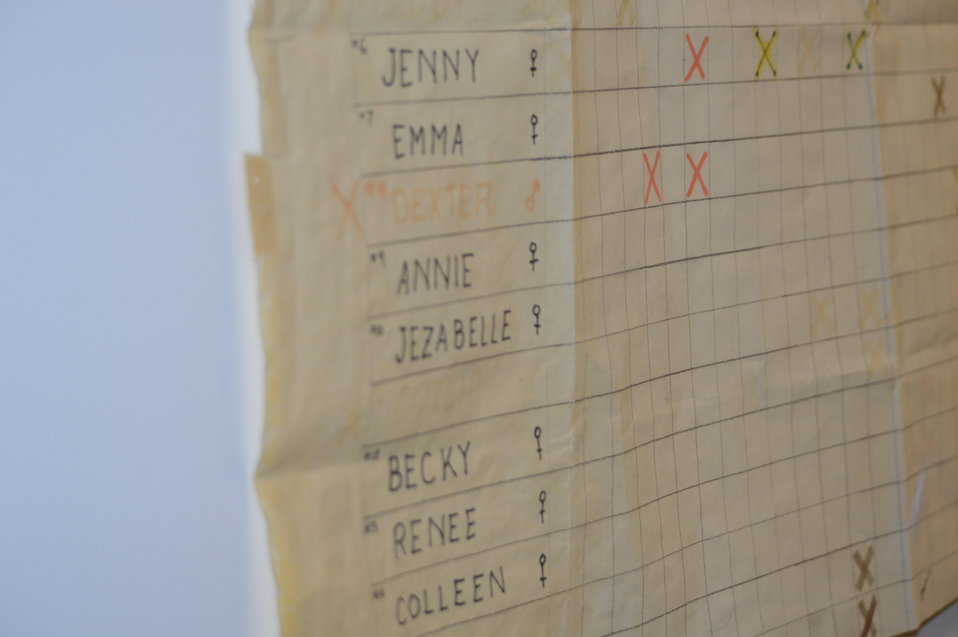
Interns visit the NBFFCC

In the summer of 2012, USFWS Region 6 interns visited the National Black-footed Ferret Conservation Center (NBFFCC) in Colorado to learn how the program reintroduces the endangered Black-footed ferret back into its native habitat.